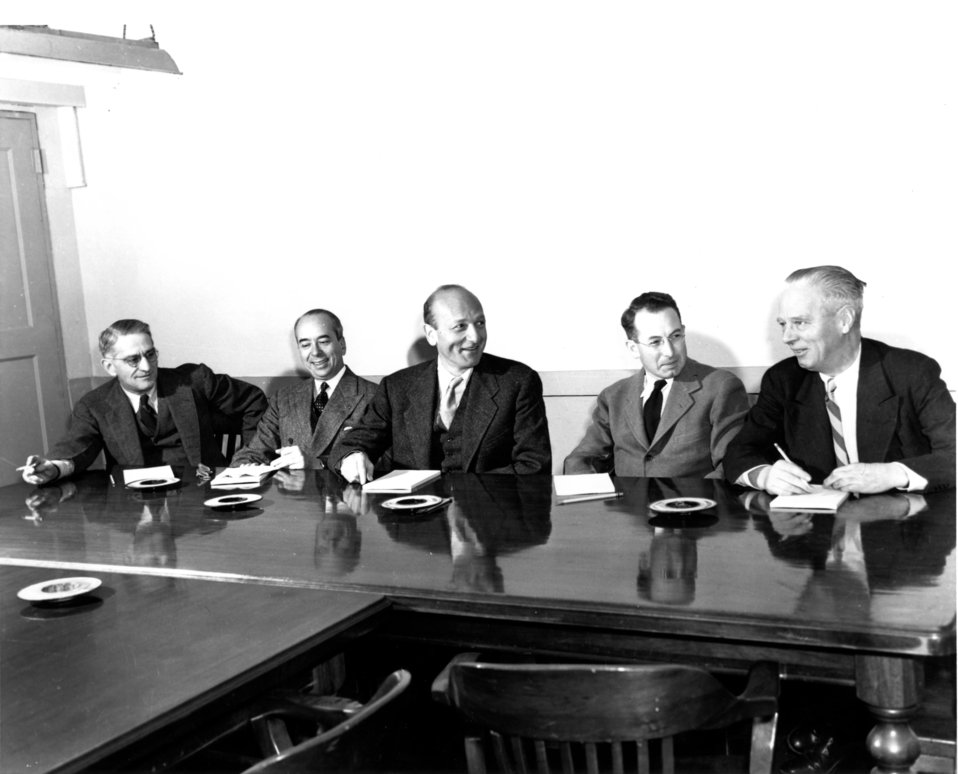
First Commission: left to right: William Waymack, Lewis Strauss, David Lilienthal, Robert Backer and Sumner Pike at Oak Ridge.